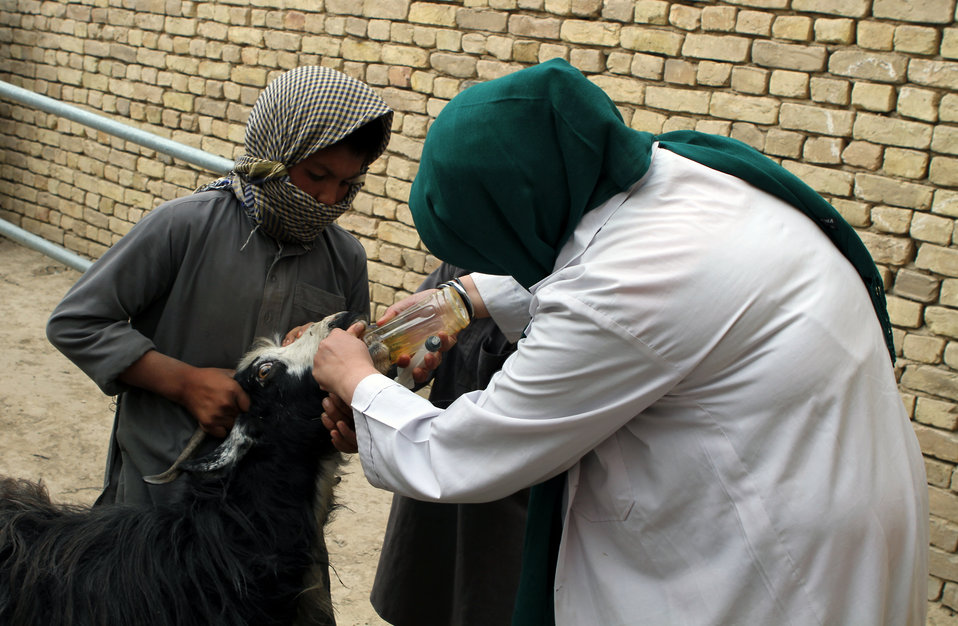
Development of Veterinary...